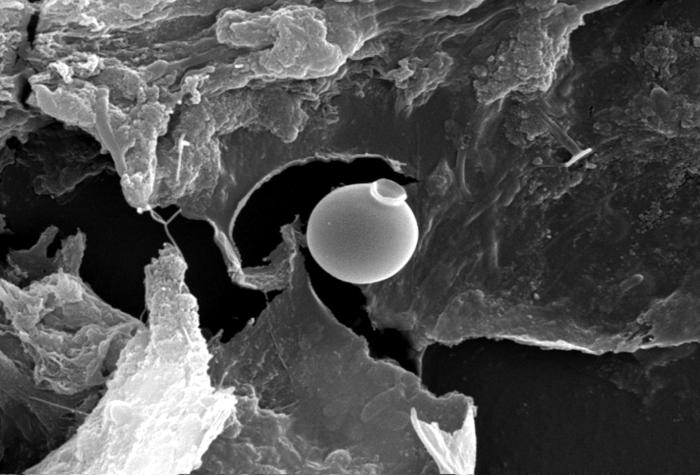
This scanning electron micrograph (SEM) of an untreated water specimen extracted from a wild stream mainly used to control flooding during inclement weather, revealed the presence of unidentified organisms, which included bacteria, protozoa, and algae. Clearly visible in the center of this image, was a exquisitely-formed unidentified round vescicle-shaped microorganism, which may have been algal, or diatomic. Shaped like an ancient Grecian urn, the almost perfectly rounded smooth, flawless surface was made even more beautiful given its delicate structure. For a colorized version of this image, see PHIL 11708.